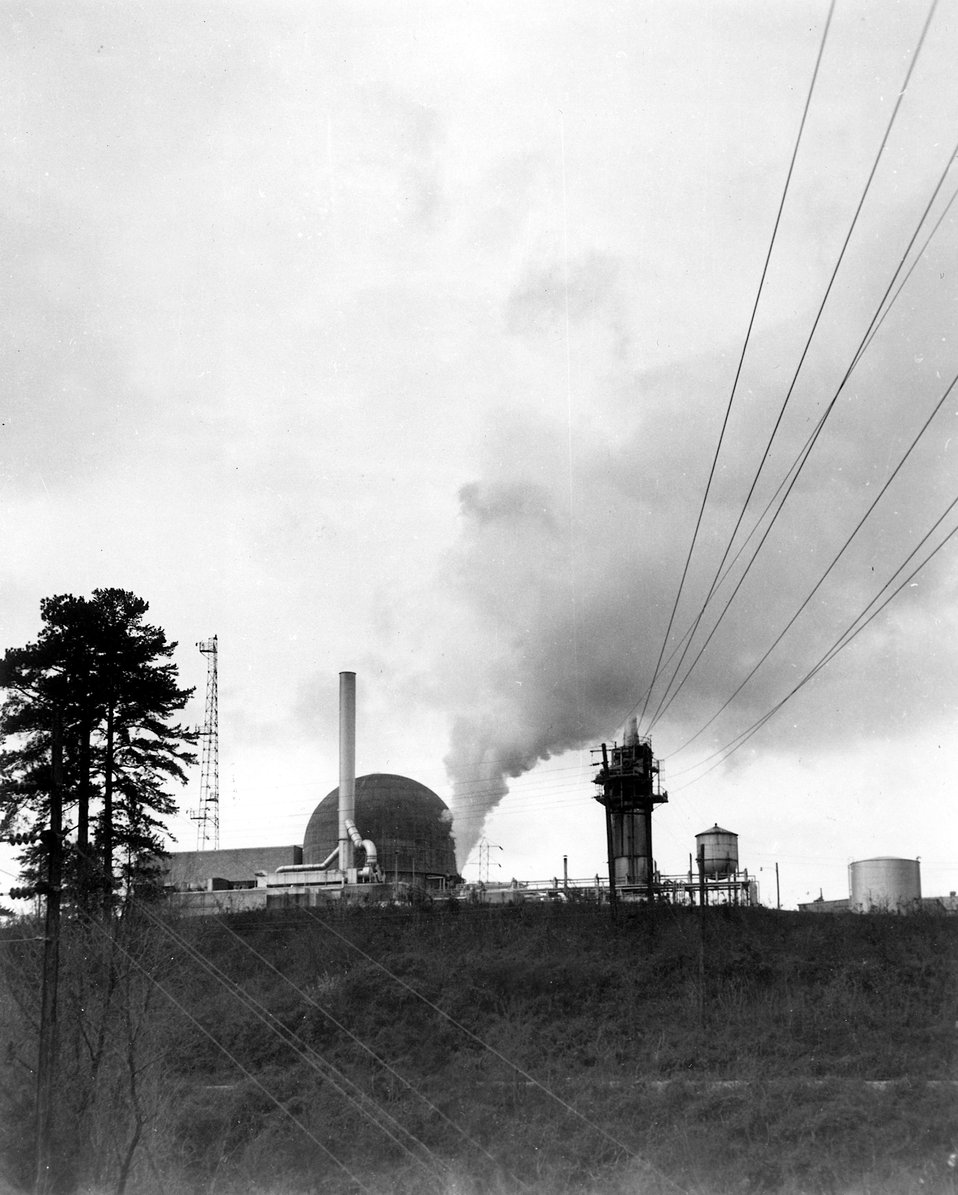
Simulated Design Basis Accident (DBA) tests--using the decommissioned Carolinas-Virginia Tube Reactor (CVTR)--in April 1969 provided the first experimental data on the response of a full-scale containment system. Circa 1970.